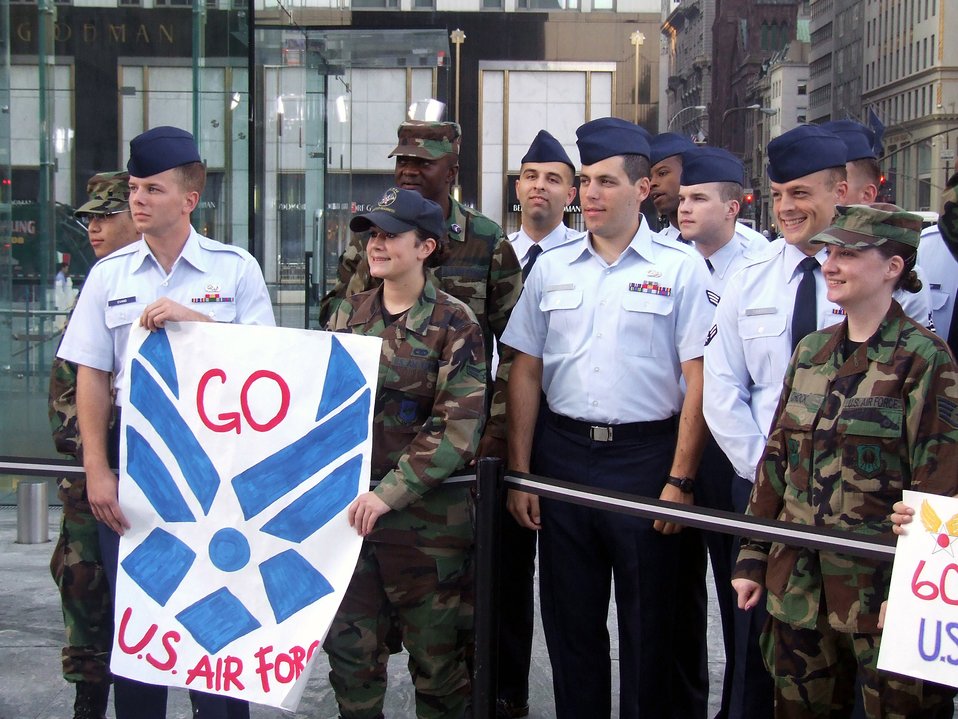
CBS' 'The Early Show' recognizes AF 60th anniversary

Airmen participate in CBS'